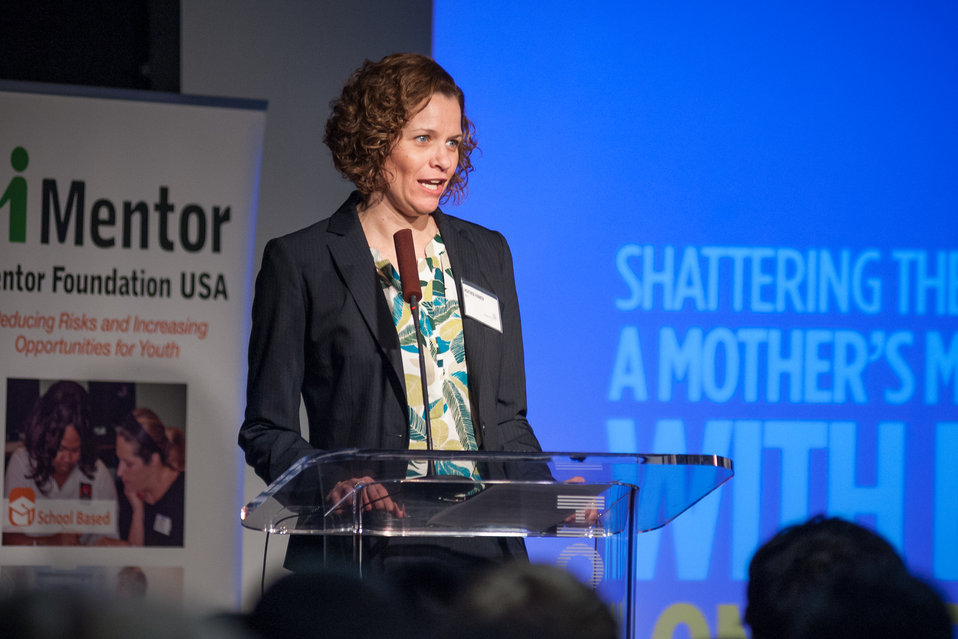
Mentor NDFW Event 2014

Mentor Foundation USA, in partnership with the National Institute on Drug Abuse (NIDA) and other key partners hosted a Youth Drug Facts Rally at the House of Sweden on Thursday, 30th January 2014. Approximately 200 students from five local high schools attended and had the opportunity to interact with top U.S. scientific experts and inspiring guest speakers to “shatter the myths” about drugs and substance abuse, while pledging to stay drug-free.